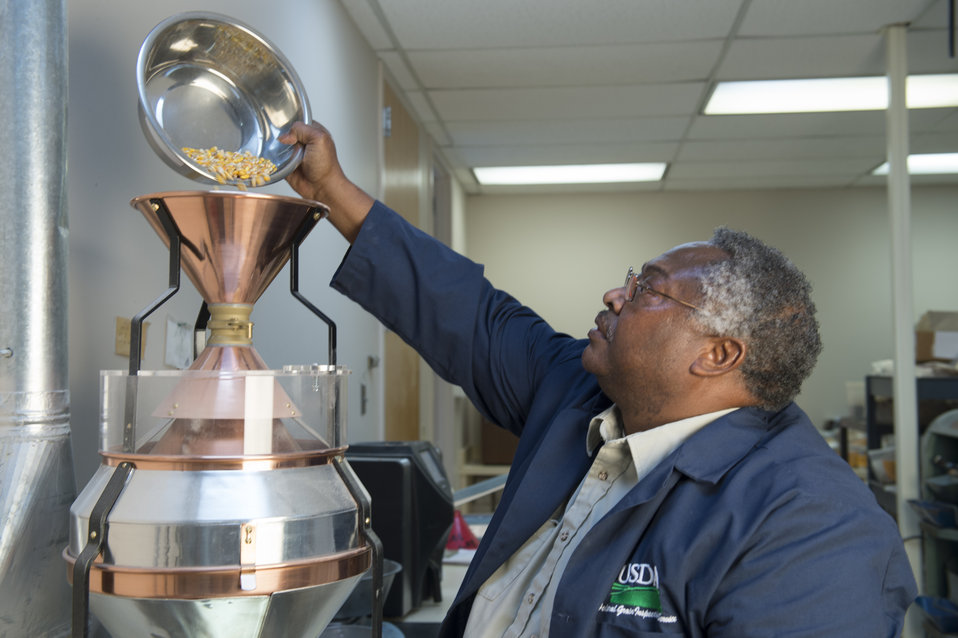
A U.S. Department of Agriculture (USDA) Grain Inspection, Packers and Stockyards Administration (GIPSA) Federal Grain Inspection Service (FGIS) scientist tests corn at the FGIS inspection laboratory in New Orleans, LA on Monday, Nov. 18, 2013.